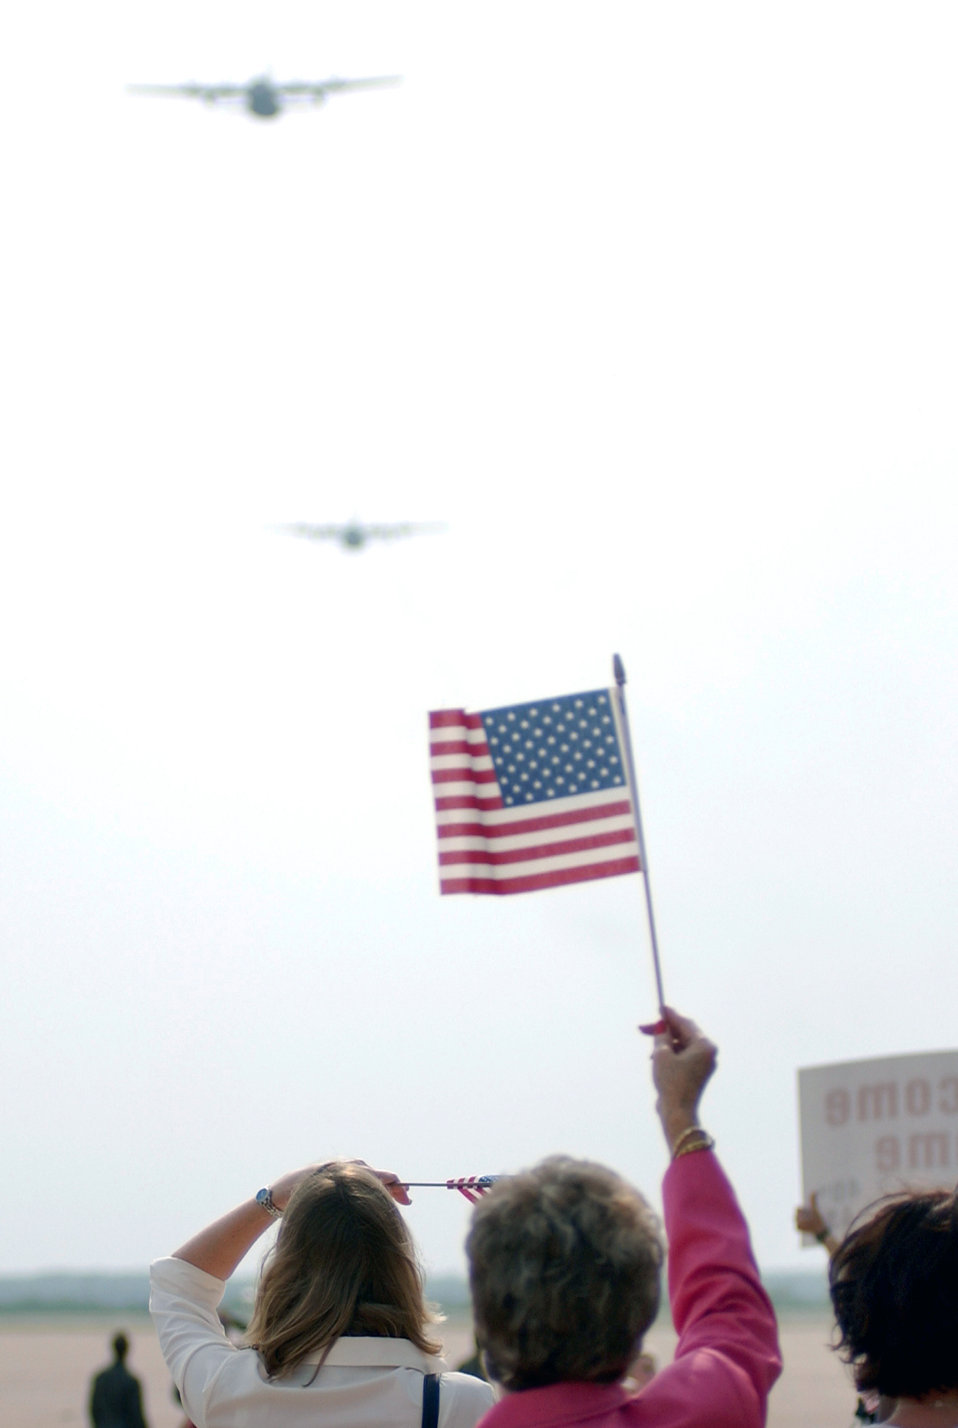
Flying colors

DYESS AIR FORCE BASE, Texas -- Friends and familty anxiously await as members from the 317th Operations Group return home after being deployed in support of Operation Enduring Freedom.